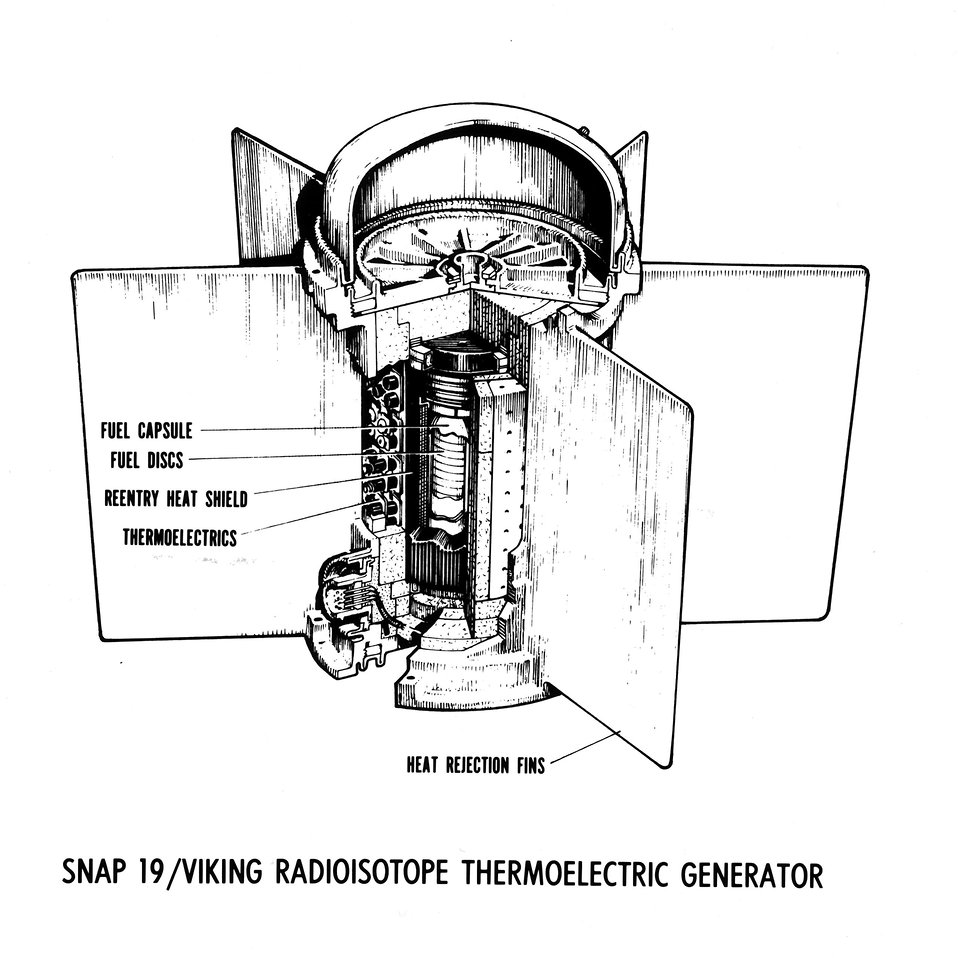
SNAP-19 is one in a series of nuclear power sources developed for space use by the Energy Research and Development Administration under its SNAP (Systems for Nuclear Auxiliary Power) program. Circa 1975.